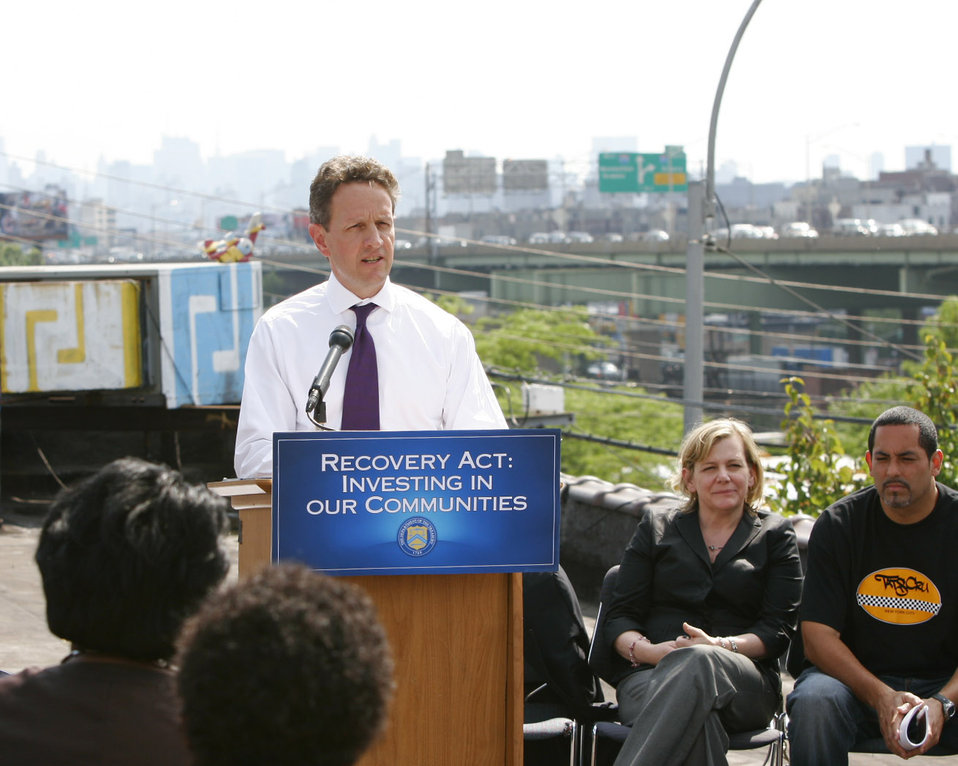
The Point: June 29, 2009

Secretary Geithner speaking at The Point, a CDFI in Bronx, NY, to highlight the local impact of the American Recovery and Reinvestment Act investments and announce $90 million in financial assistance awards for 59 Community Development Financial Institutions.